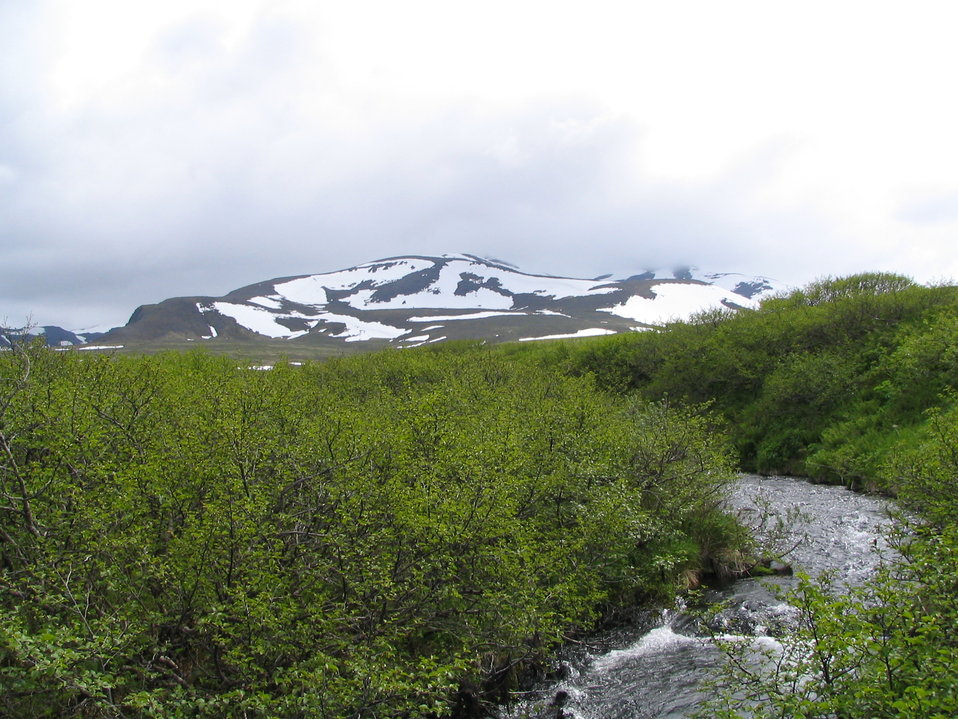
Izembek Wilderness

Wilderness near Frosty Peak, Izembek National Wildlife Refuge
Photo by Kristine Sowl,
USFWS, Public Domain